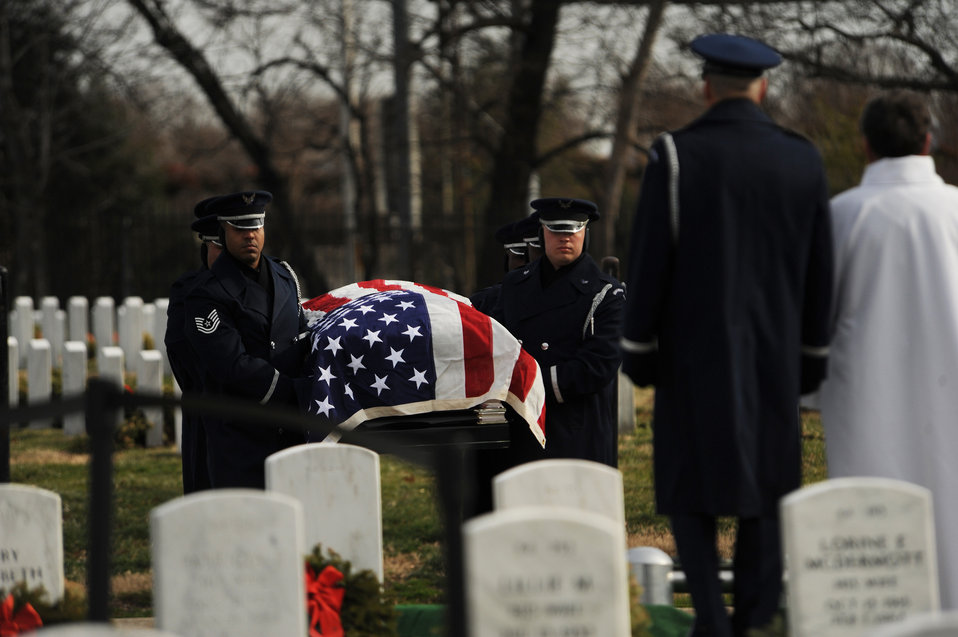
Retired Lt. Col. Luke Weathers Jr. funeral

Members of the U.S. Air Force Honor Guard deliver the casket of retired Lt. Col. Luke Weathers Jr. to the burial site Jan. 20, 2012, at Arlington National Cemetery, in Virginia. Weathers was an original Tuskegee Airman who shot down two German planes during World War II.